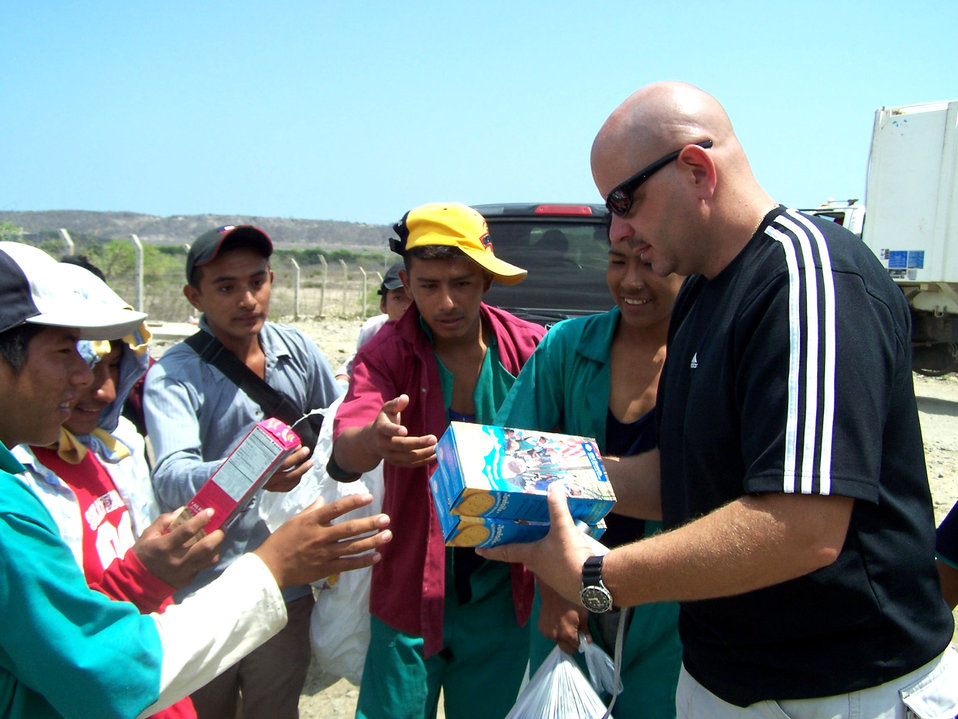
Airmen collect items for Manta community

Master Sgt. John McCassin hands out Girl Scout cookies to residents of the Manta City Dump in Ecuador. He is assigned to the Air National Guard's 157th Air Refueling Wing at Pease, N.H.